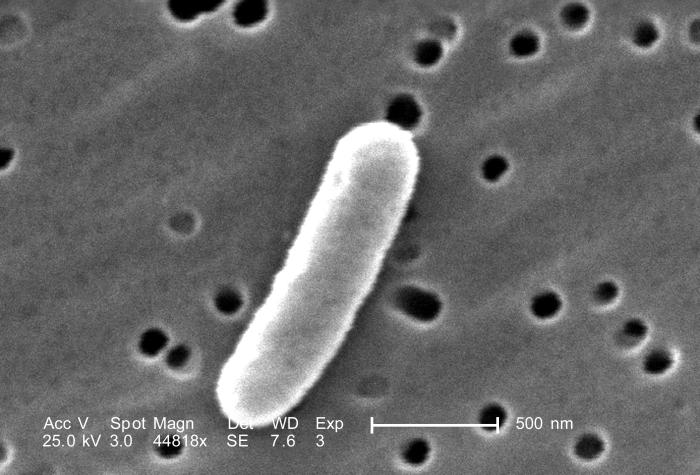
At an extremely high magnification of 44, 818X, twice that of PHIL 10574 and 10575, this scanning electron micrograph (SEM) revealed some of the morphologic details displayed by a single Gram-negative Escherichia coli bacterium. This bacterium was a member of the strain, 0:169 H41 ETEC (Enterotoxigenic E. coli). See PHIL 10577 for a colorized version of this image.Enterotoxigenic E. coli, a common cause of bacterial diarrhea...